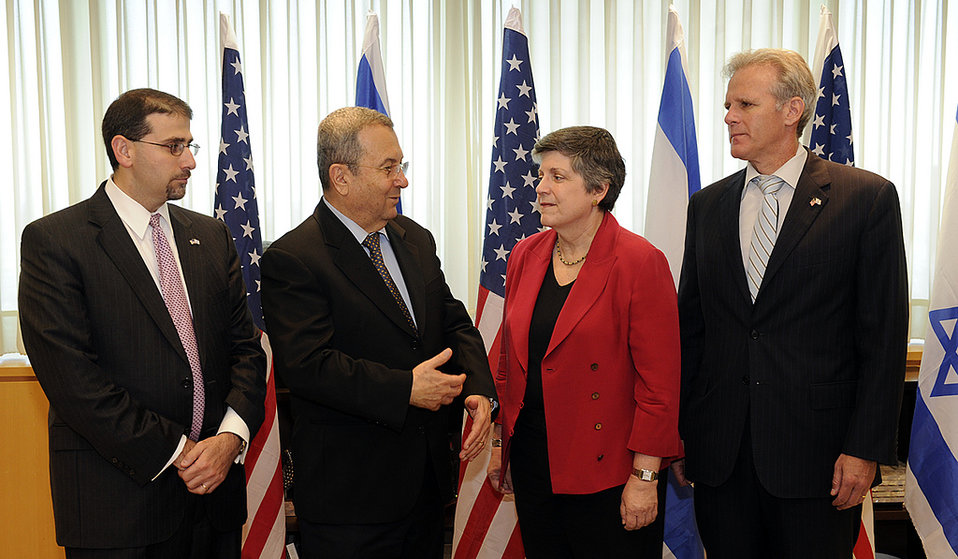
Secretary Napolitano and Ambassador Shaprio Meet With Israeli Defense Minister Barak

U.S. Secretary of Homeland Security Janet Napolitano, center right, and U.S. Ambassador to Israel Daniel Shapiro, left, meet with Israeli Minister of Defense Ehud Barak, center left, in Israel, May 20-22.